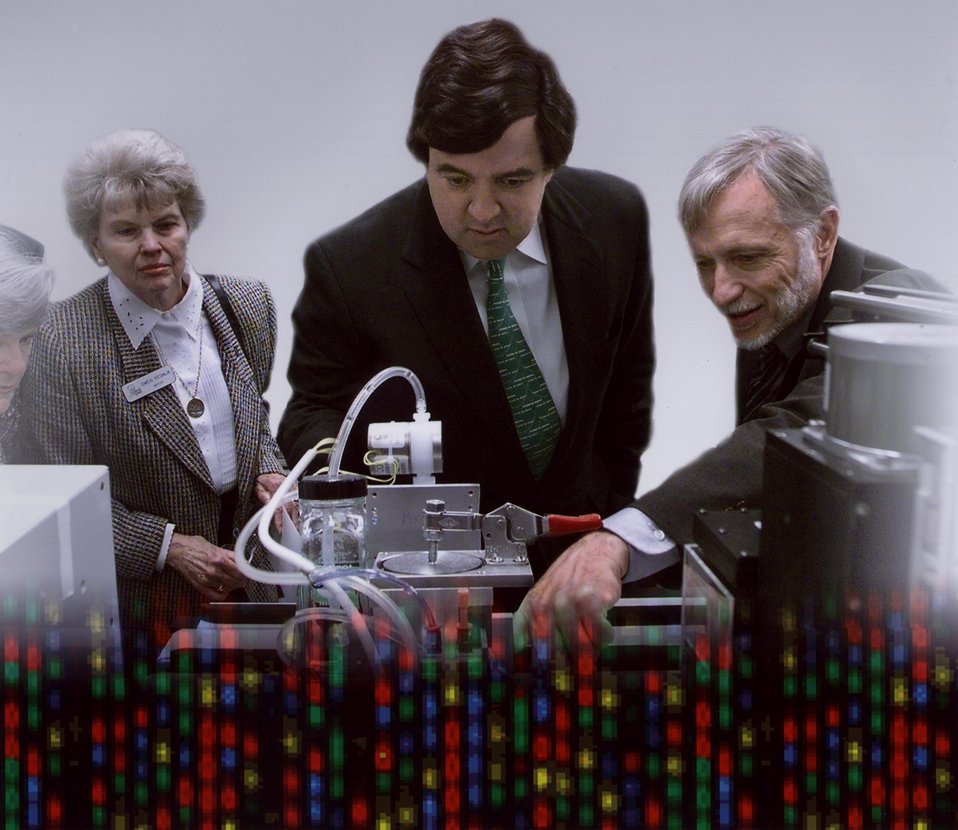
SECRETARY OF ENERGY RICHARDSON VISITING THE JOINT GENOME INSTITUTE.
THE JGI, LOCATE NORTH OF LLNL, IS A COLLABORATION OF LLNL, LBNL, AND LANL. AT THE PRODUCTION SEQUENCING FACILITY OF THE JGI, EMPLOYEES OF THE THREE INSTITUTIONS ARE WORKING TOGETHER TO SEQUENCE HUMAN CHROMOSOMES 5 ,16 AND 19 FOR THE WORLDWIDE HUMAN GENOME PROJECT. SEQUENCING IS THE PROCESS HUNTING GENES. EACH OF OUR 100,000 GENES IS COMPOSED OF THE FOUR BASES, CALLED BASE PAIRS. SCIENTISTS ULTIMATELY WANT TO DECODE THE ENTIRE SEQUENCE OF DNA BASES, IN ORDER TO IMPROVE MEDICINE, HEALTH CARE, AND OTHER AREAS OF BIOLOGICAL SCIENCE.